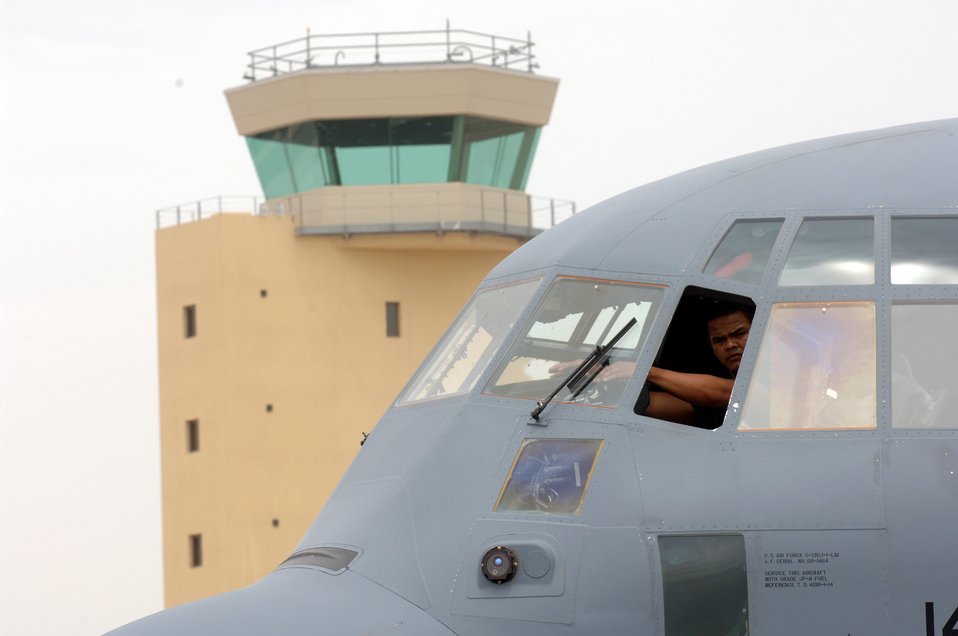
Herc operations

A C-130J Hercules waits to be moved on the flightline before a mission at a deployed location in Southwest Asia on Wednesday, April 5, 2006.